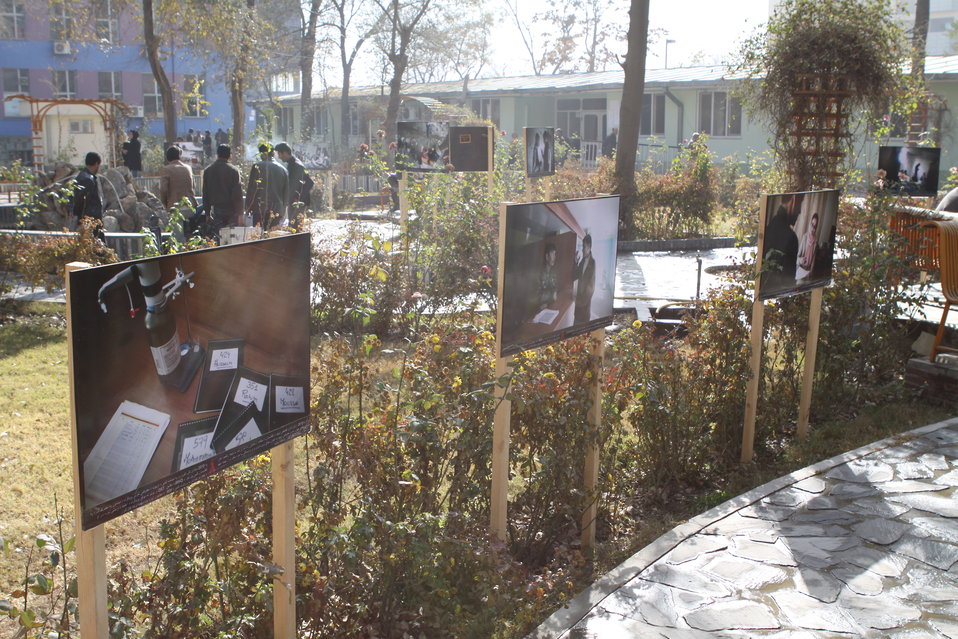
Community Health Workers Celebrated

Kabul, Afghanistan | December 5, 2010 — In support of the United Nations designated International Volunteer Day for Economic and Social Development, Afghanistan’s Ministry of Public Health celebrated its annual Community Health Worker Day today. Acting Minister of Public Health Dr. Suraya Dalil, USAID Senior Deputy Mission Director Robert Hellyer, other government officials, and international donors joined in recognizing the critical contribution of community health workers in Afghanistan and encouraging them to continue their voluntary support to their communities.
The event praised the contributions of the more than 22,000 volunteers throughout the country who deliver community level health-education, counseling, and services out of village health posts located in private homes. The Ministry of Public Health envisioned that community-based healthcare programs will actively encourage communities and families to adopt healthy lifestyles and behaviors, and provide families access to high quality and socially acceptable preventative medicine and life-saving services.
“We have 22,000 community health workers in Afghanistan that are able to implement the basic and standard medicines. They all have been trained through a job description,” said Minister Dalil. Addressing the health workers, she added, “I am proud and feel powerful that I have people like you.”
USAID-funded health projects collaborate closely with the Ministry of Public Health to improve the health and nutritional status of Afghans, provide quality primary healthcare, and promote healthy behaviors at the community and household-levels. USAID supported the training of more than 9,000 of the volunteer community health workers currently working in Afghanistan.
“On behalf of the American people, I congratulate the Community Health Workers for their diligence to gain the skills and knowledge necessary to serve their communities in this important role,” said USAID Senior Deputy Mission Director Hellyer. “USAID strongly supports community based health care and believes that quality community-based health services are essential to reaching Afghanistan’s Millennium Development Goals.”
To support the Basic Package of Health Services, USAID assisted in developing the community health worker training manual, helped train community health worker supervisors and master-trainers, facilitated in-service training, and produced and developed reporting tools, job aids, and education materials.